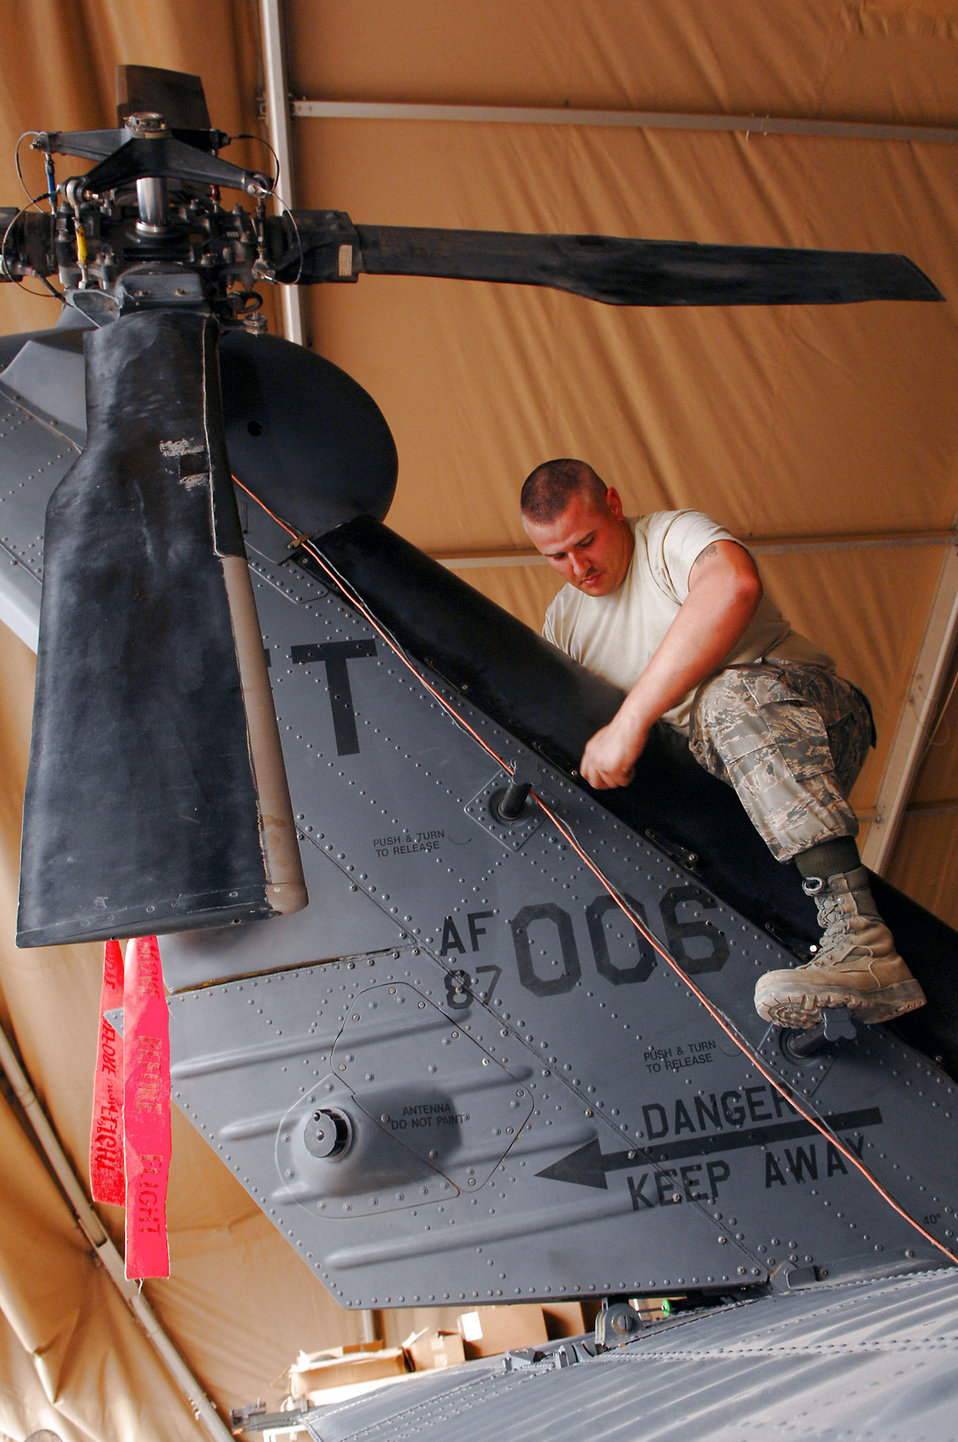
Helo maintenance

Staff Sgt. Tait Delzer tightens down the drive shaft cover of an HH-60 Pave Hawk helicopter March 12 at Balad Air Base, Iraq. Sergeant Delzer, a crew chief with the 64th Expeditionary Helicopter Maintenance Unit, performed an inspection on the aircraft after it had been flown 300 hours. During the inspection, all of the panels and covers were removed to facilitate preventative maintenance on the aircraft's systems and equipment. Sergeant Delzer is deployed from Moody Air Force Base, Ga.